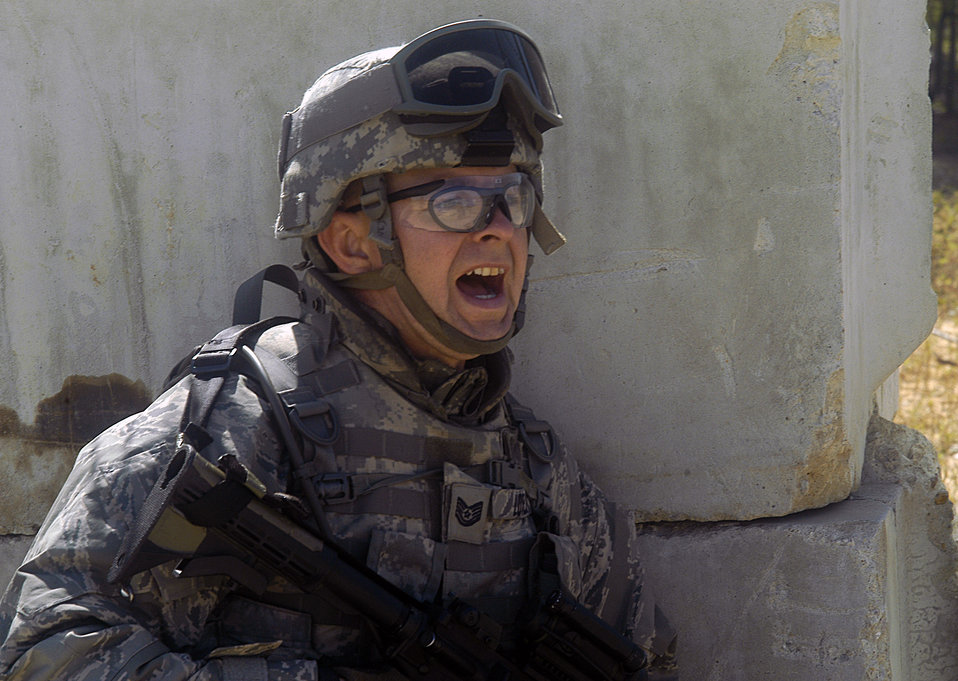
Airmen train at Fort Bragg for 'outside the wire' deployment

Tech. Sgt. Michael Lovejoy yells directions to fellow Airmen and Soldiers during base defense exercises Sept. 24 at Forward Operating Base Patriot located on Fort Bragg, N.C. Airmen, Sailors and Soldiers are attending Combat Skills Training at Fort Bragg prior to their deployment on 12 different Provincial Reconstruction Teams to Afghanistan in November. Sergeant Lovejoy is from Offutt Air Force Base, Neb.